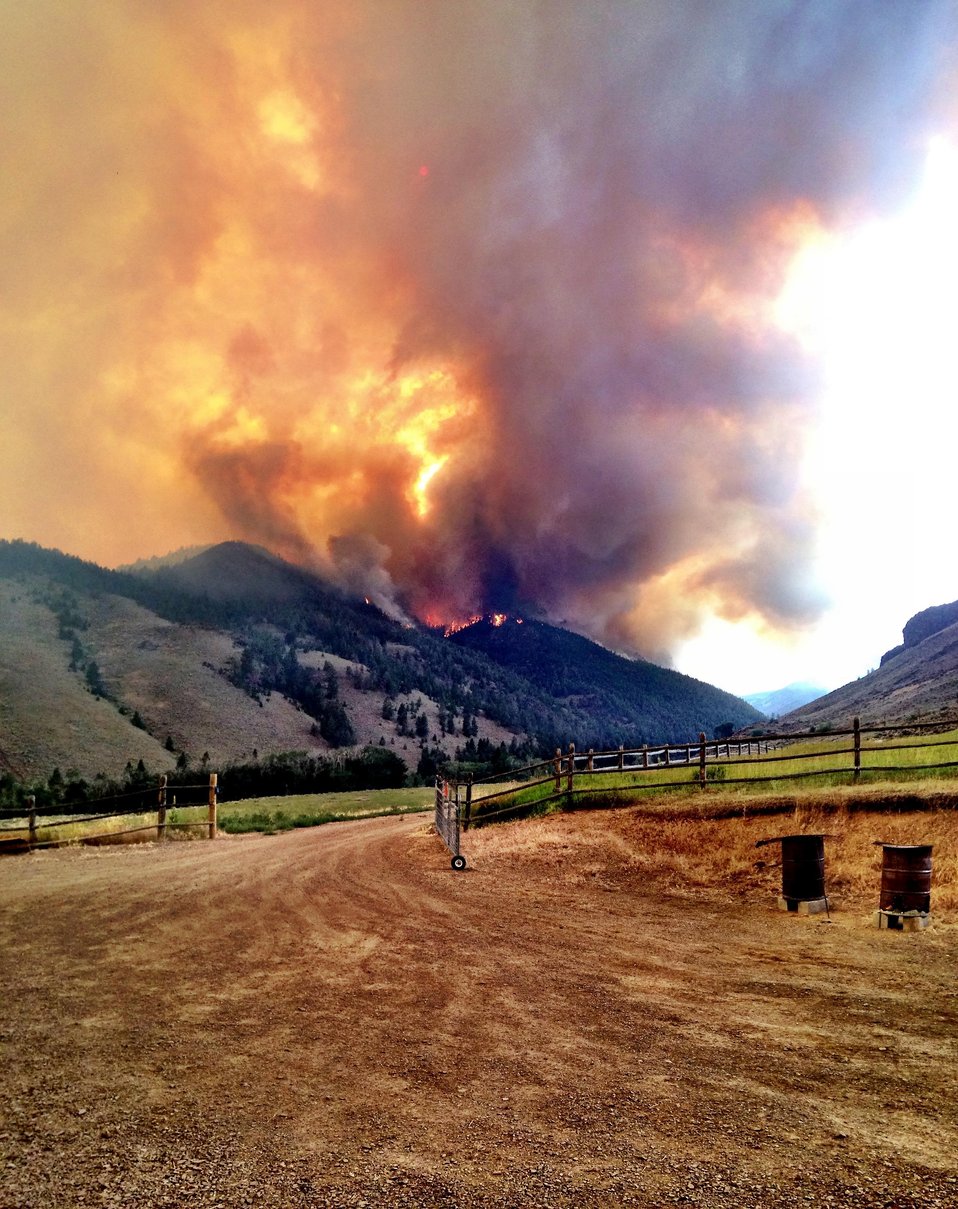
The Lodgepole Fire in the Salmon-Challis National Forest near Challis, ID began on Jul. 20, 2013 by lightning has consumed approximately 13,700 acres and is approximately 15% contained.